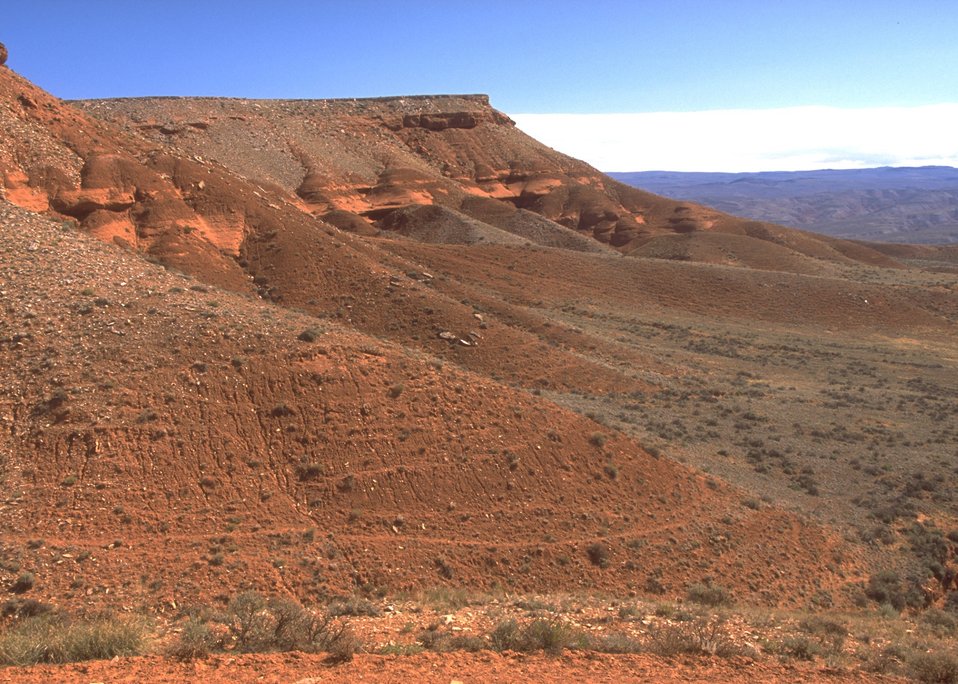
View along the Red Gulch/Alkali Back Country Byway, Worland Field Office.